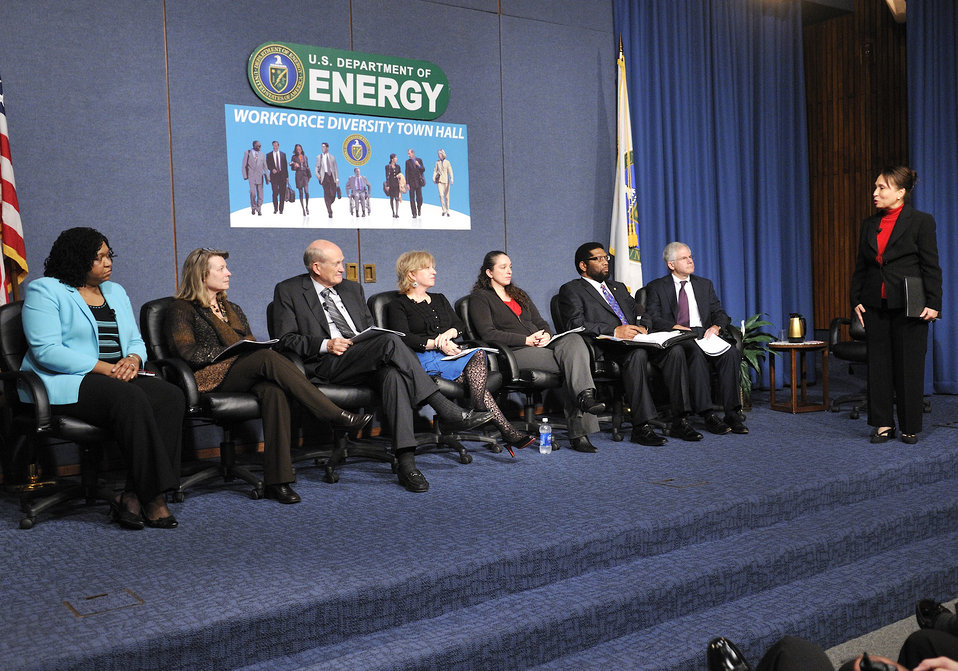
In a panel moderated by Former Secretary of Labor Alexis Herman, panel members discussed diversity and inclusion in their offices and sites. Panel members are Dr. Bill Brinkman, Acting Under Secretary for Science; Dr. Jeffrey Salmon, Deputy Director for Resource Management, Science; Anita Decker, Chief Operating Officer, Bonneville Power Administration; Neile Miller, Principal Deputy Administrator, NNSA; Rita Clinton, Director, Office of Human Resource Services; John Greenwood, Deputy Manager, Chicago Operation Office; and Patricia Hoffman, Assistant Secretary for Energy Delivery and Energy Reliability.